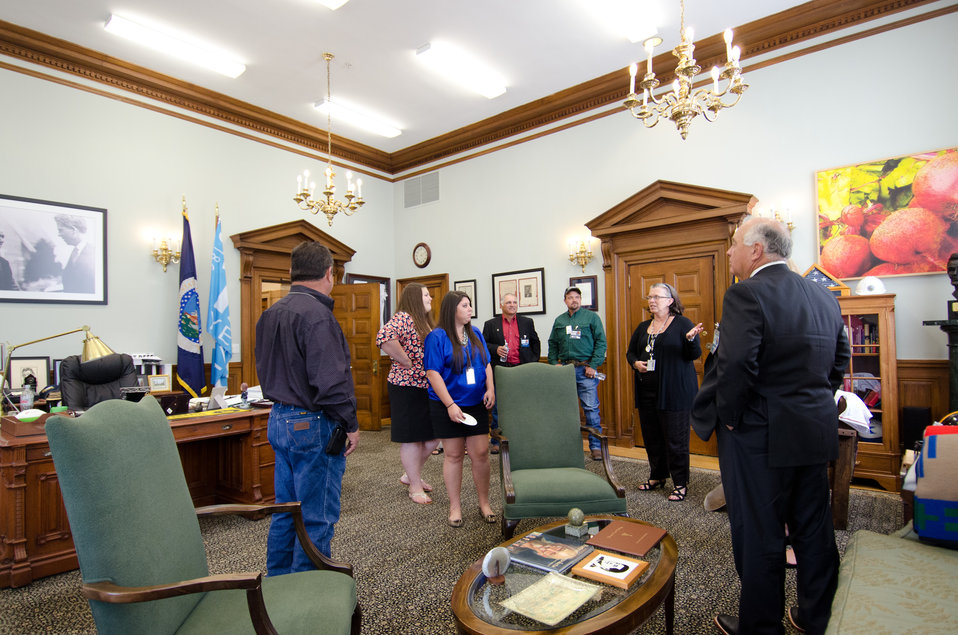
During a break in the first administrative/training meeting of the U.S. Department of Agriculture's (USDA) Council for Native American Farming and Ranching (CNAFR) some representatives and thier aids are given a tour of Secretary Tom Vilsack's office on Monday, Aug. 13, 2012 at the USDA headquarters Whitten Building, in Washington, D.C. CNAFR was created to advise the Secretary on ways to eliminate barriers to participation for Native American Farmers and Ranchers in USDA programs. The Council was established as part of the Keepseagle settlement, and is conducted under the oversight of USDA's Office of Tribal Relations, which is part of the Office of the Secretary of Agriculture. The Director of Tribal Relations Joanna Mounce Stancil serves as Designated Federal Official (DFO) for the Council.